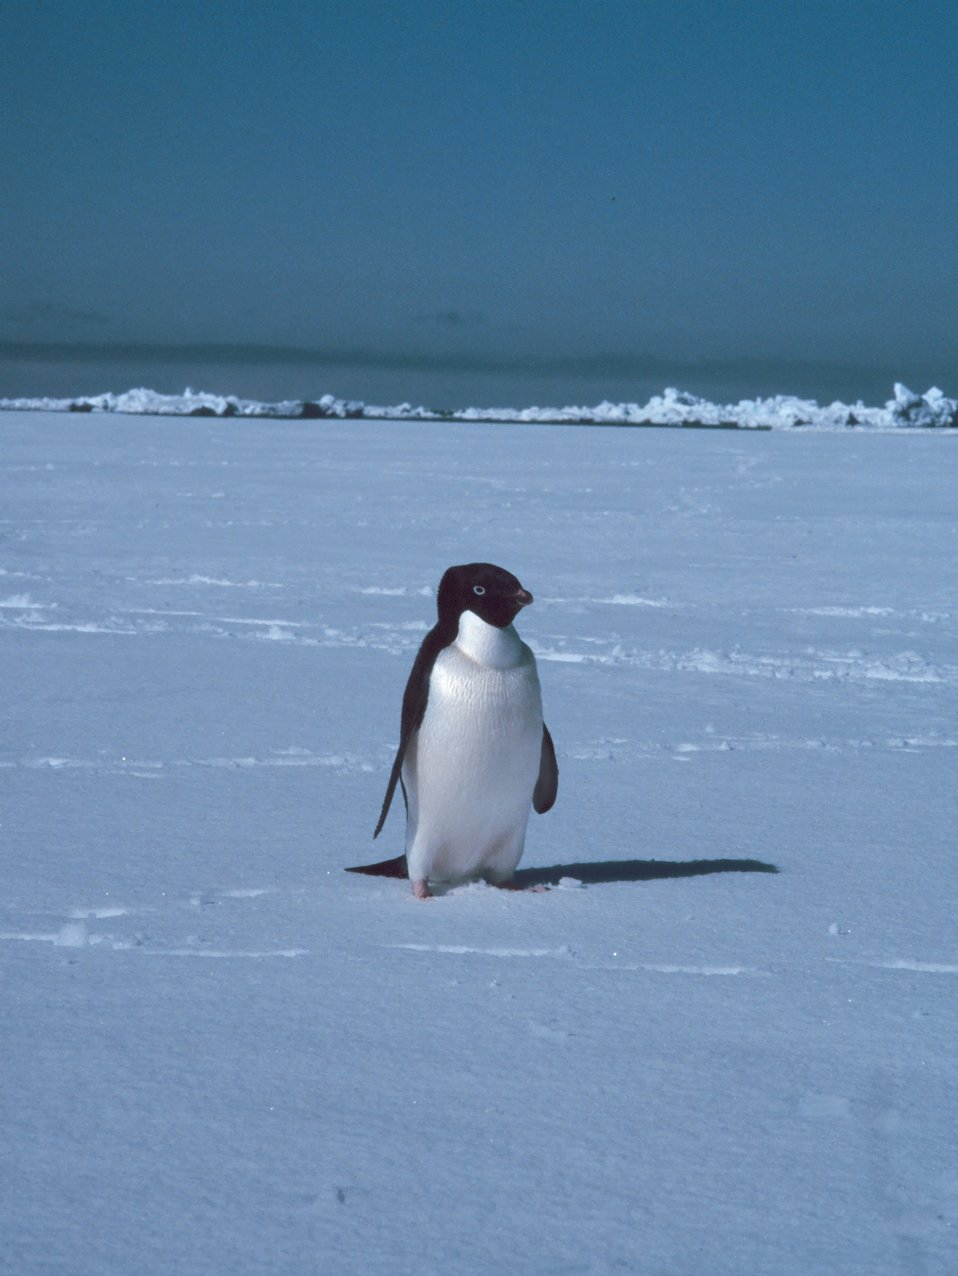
Adelie penguin.